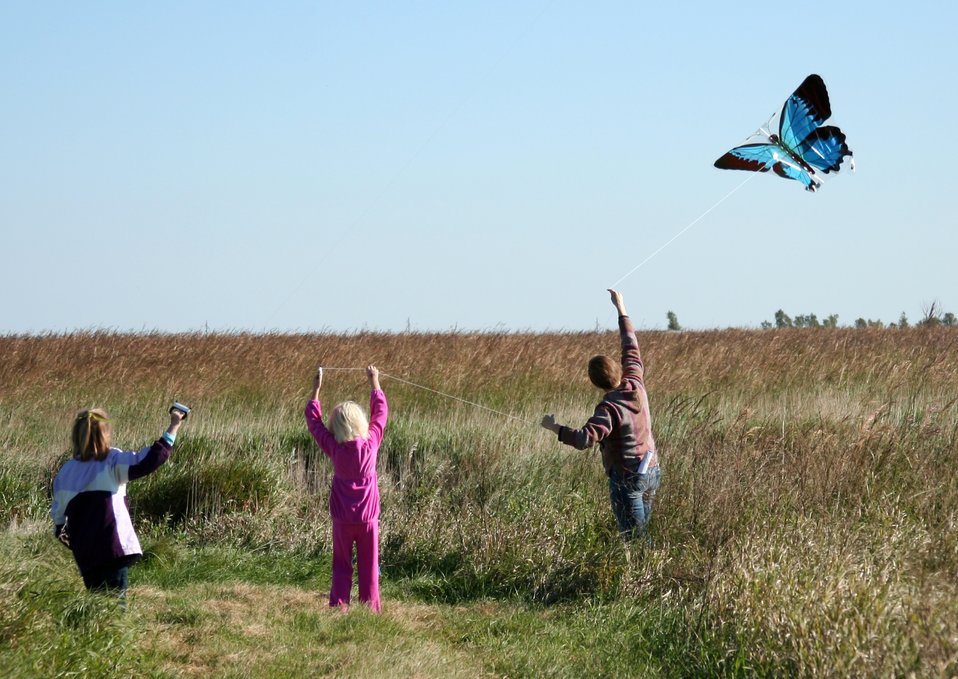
Huron Wetland Management District

Visitors fly a kite on a beautiful September afternoon in 2010 at the Huron WMD. The 'Kites N Flight' event focused on getting kids outdoors, and featuerd an educational piece on bird flight and migration.